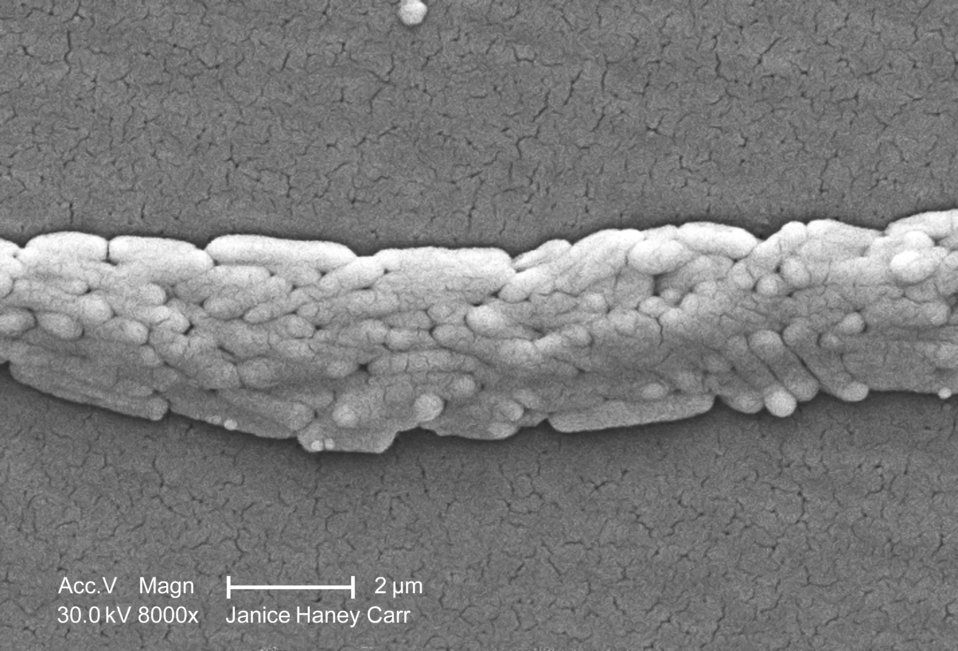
Under a moderately-high magnification of 8000X, this scanning electron micrograph (SEM) revealed the presence of a grouping of Gram-negative Salmonella typhimurium bacteria that had been isolated from a pure culture.